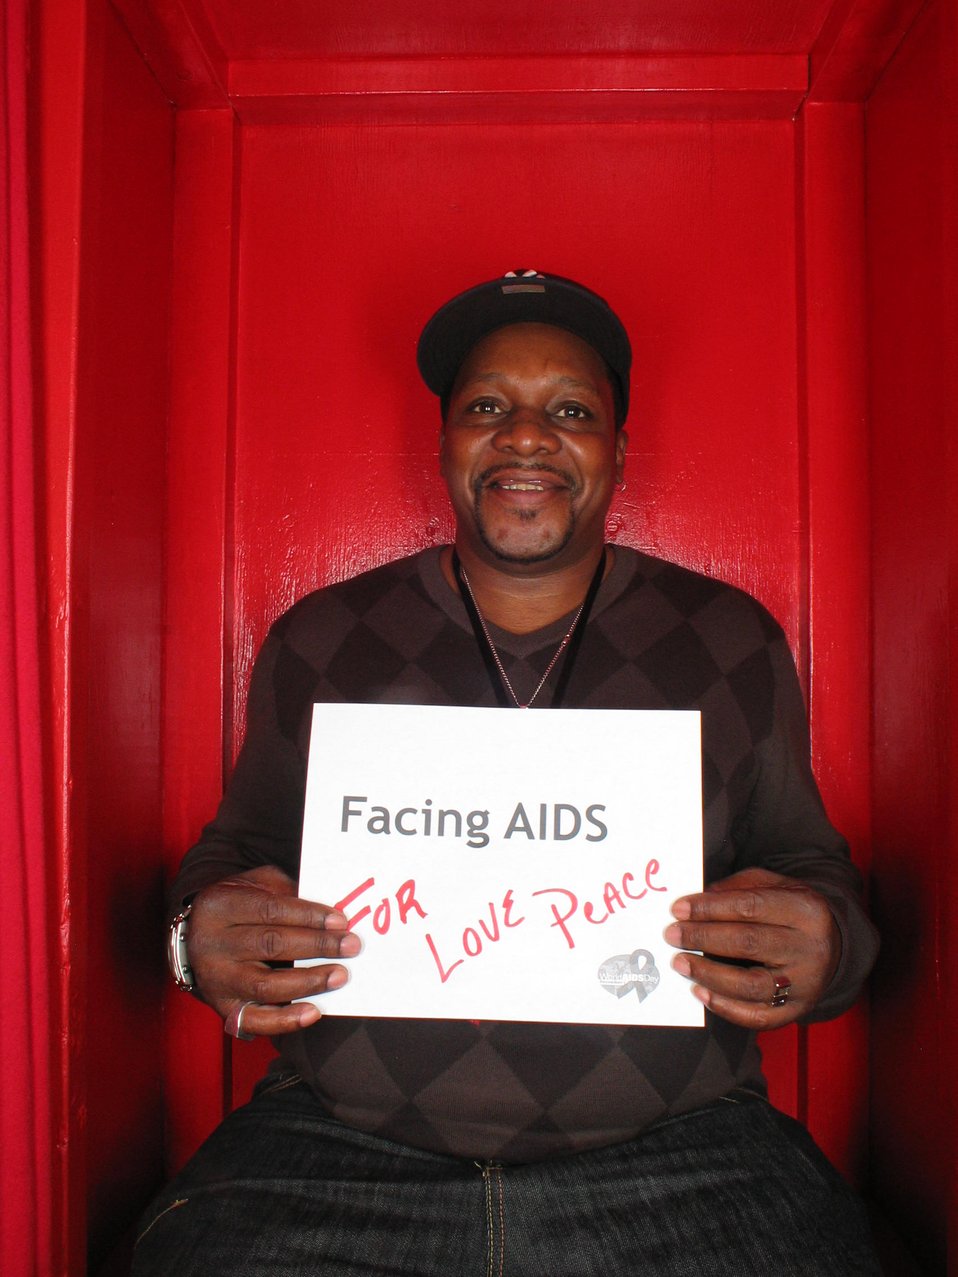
Facing AIDS for love peace.